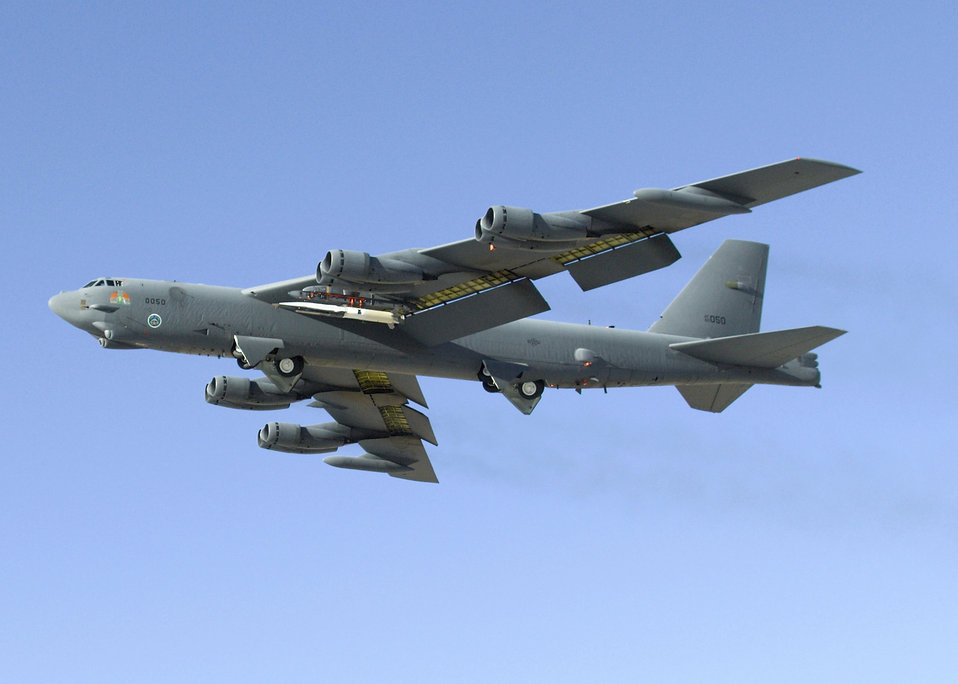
X-51A Scram jet prepare for first flight

An Air Force Flight Test Center B-52H Stratofortress performs a captive carry flight of the X-51A WaveRider Dec. 9, 2009, over Edwards Air Force Base, Calif. The captive carry mission is a key test milestone to ready to light the X-51's scramjet engine during the vehicle's first powered hypersonic flight in early 2010.